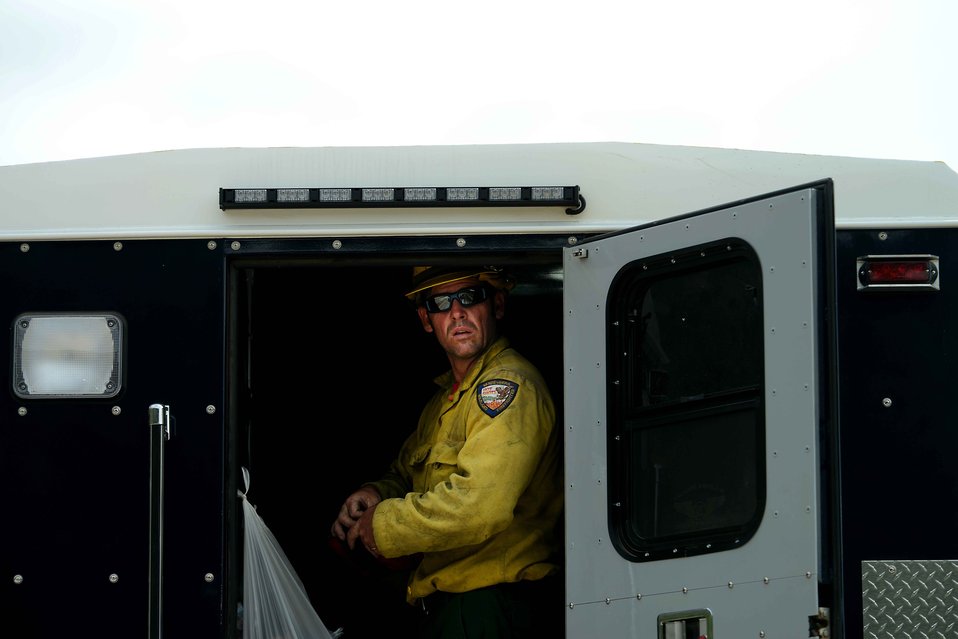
Getting ready

Nathan Ogan looks out at his worksite for the day in the Mount Saint Francois area of Colorado Springs, Colo., on June 28, 2012. Ogan and the rest of the firefighters of the Vandenberg Air Force Base, Calif., Hot Shots cut a fire line to help battle several fires in Waldo Canyon.